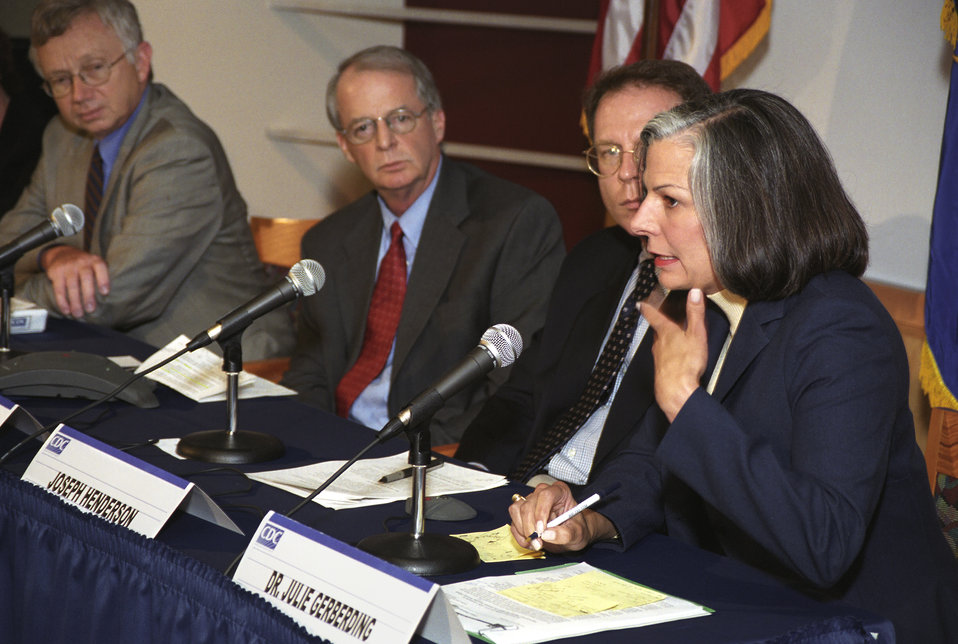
Centers for Disease Control and Prevention Bioterrorism Preparedness Press Briefing, August 27, 2002.